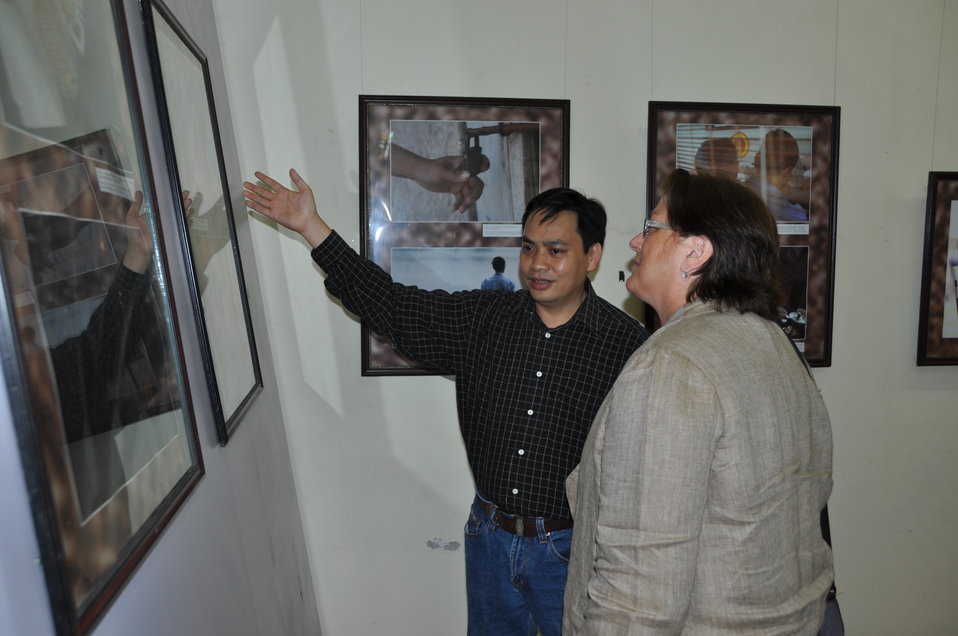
Moments in Life Exhibit: PEPFAR